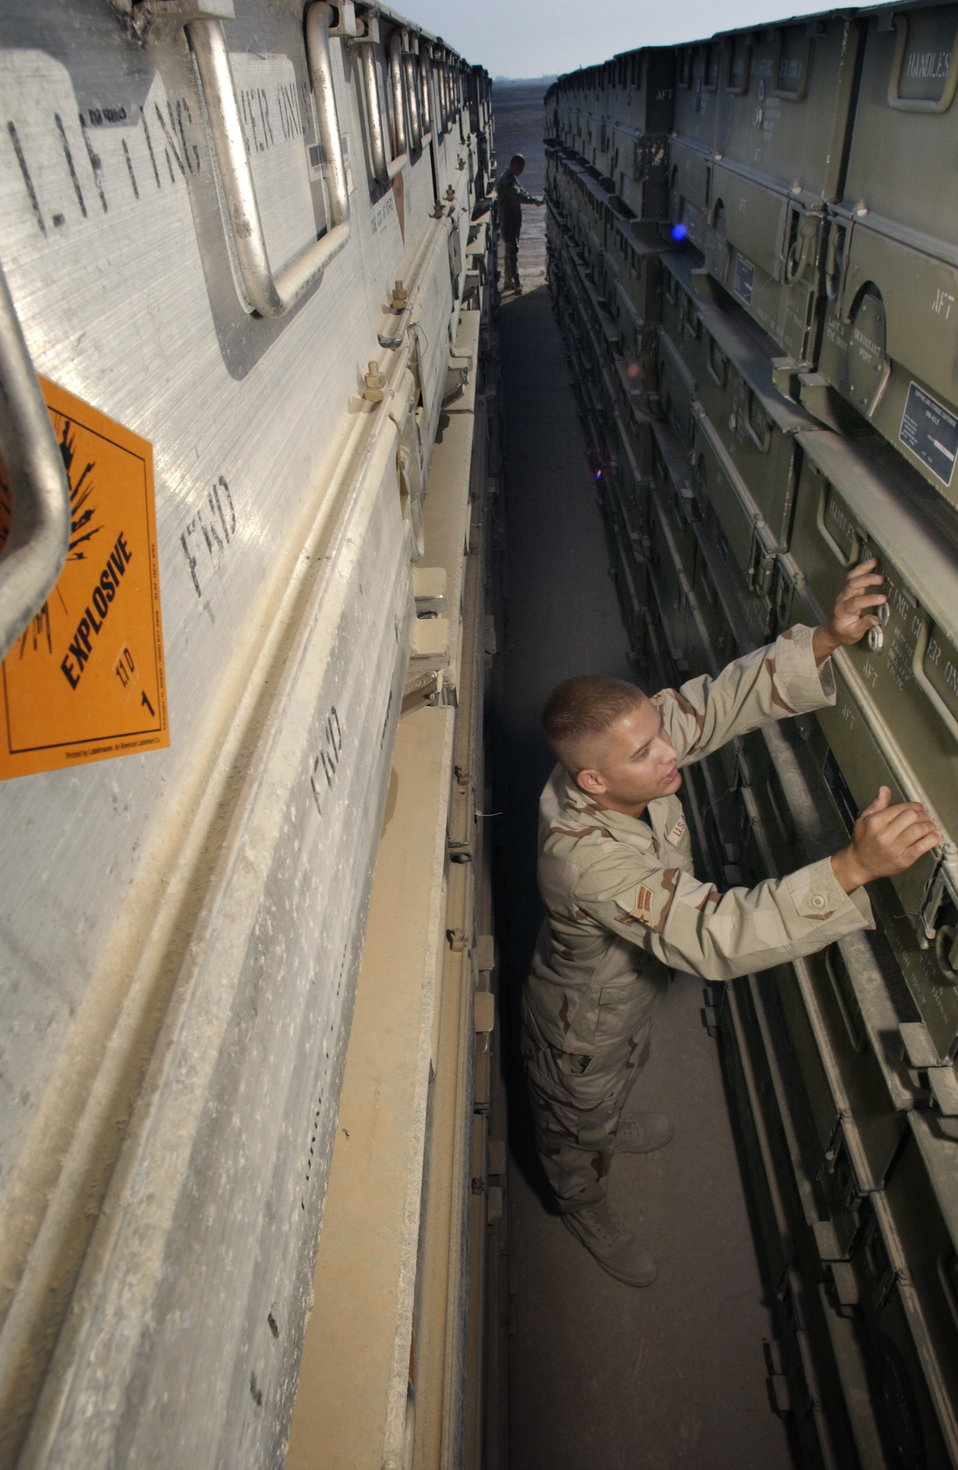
Inspections

SOUTHWEST ASIA -- Airman 1st Class Jessie Holladay checks a shipping and storage container holding CBU-87B munitions during his deployment. He works in the munitions-storage area at an undisclosed location and recently volunteered to extend for an additional 30 days. Holladay is deployed from Royal Air Force Lakenheath, England.